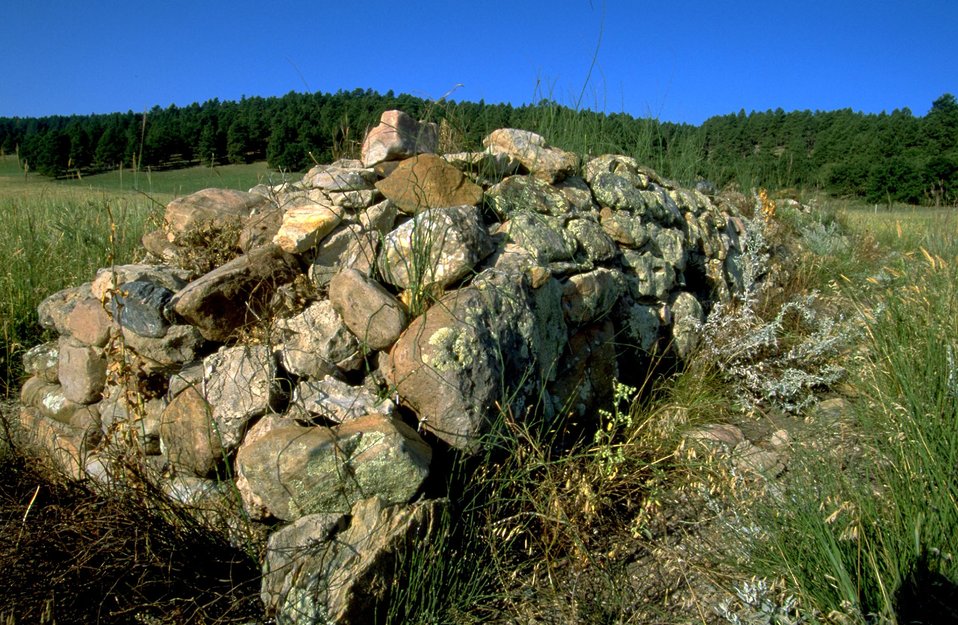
Cavalry Jumps at the south end of Fort Meade